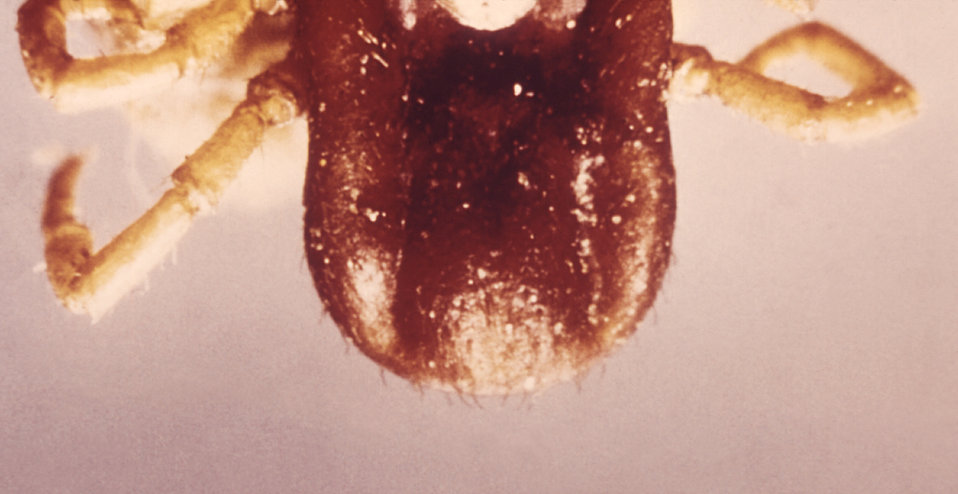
This Ixodidae hard tick has no abdominal festoons, and is therefore, a member of the genus Boophilus.